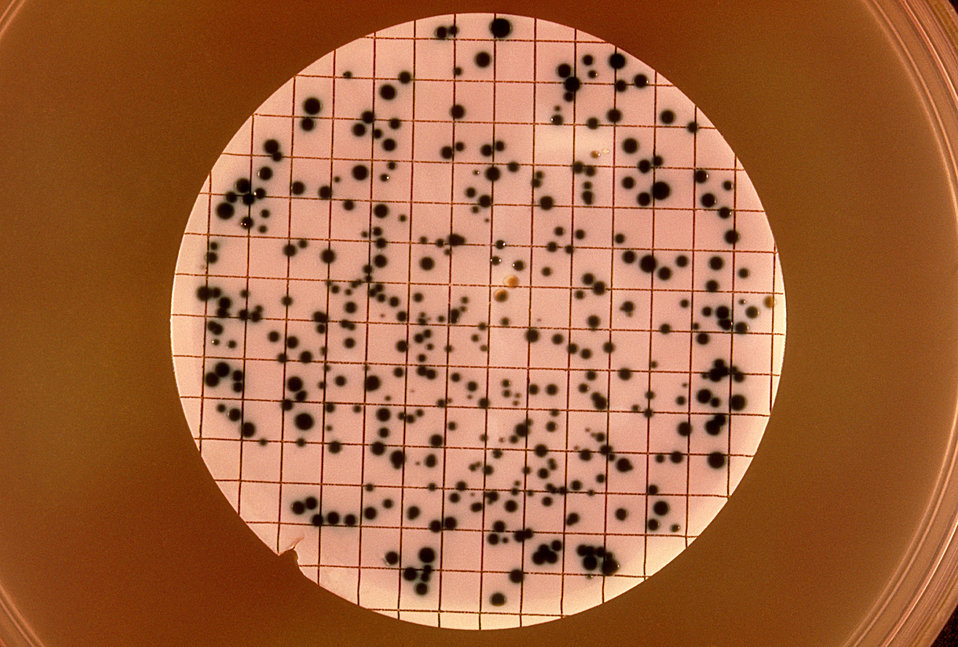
This is a plate culture of Neisseria gonorrhoeae stained with oxidase reagent after 40 hours of incubation.